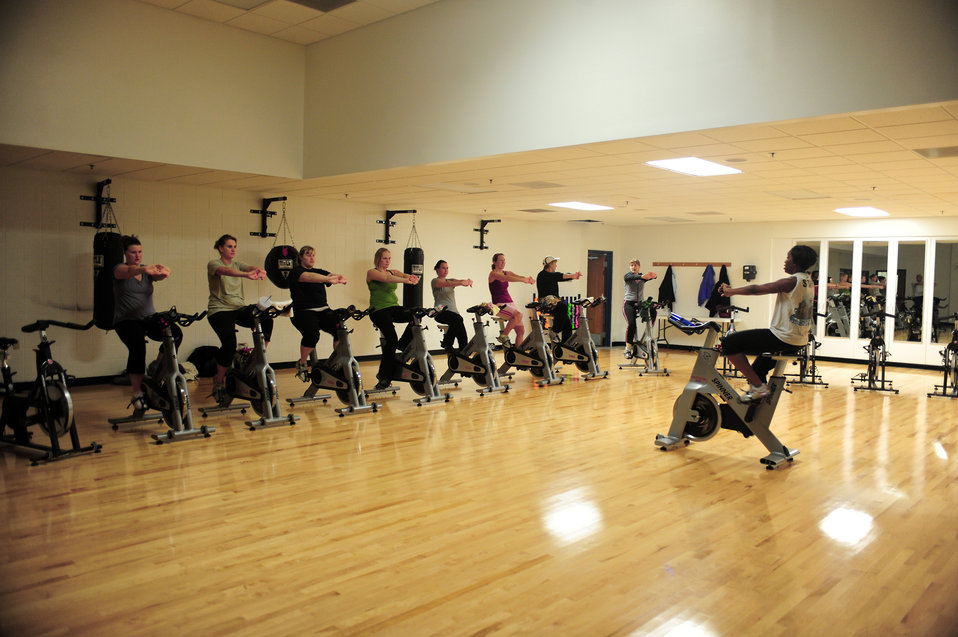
Freedom Miles encourages Ellsworth families to stay healthy

Wives of deployed Airmen endure a spin class at the Bellamy Fitness Center Feb. 2, 2010, at Ellsworth Air Force Base, S.D. The class is part of the Freedom Miles program, which is designed to keep spouses active.